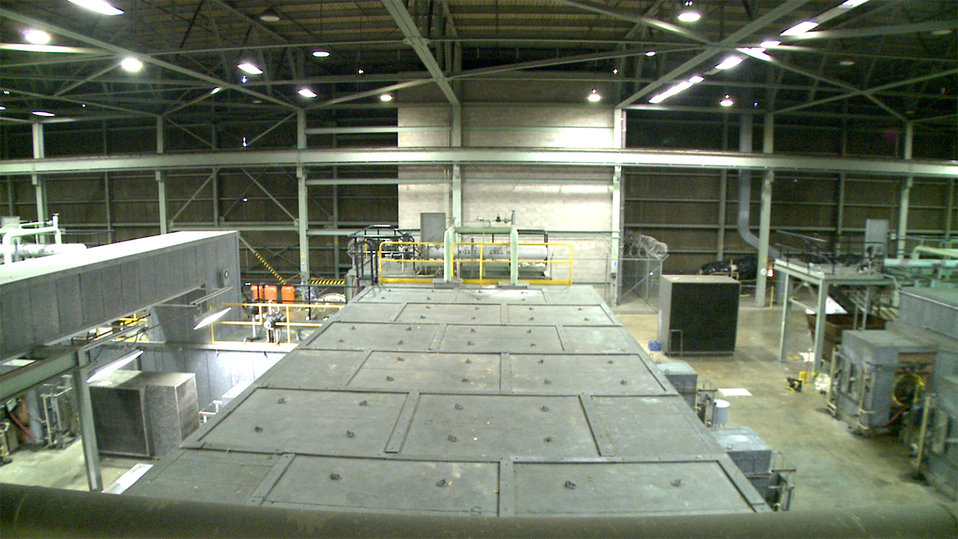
EM to Proceed with Demolition Following Completion of Cascade Cleanout Operations

The last equipment that had been operating in the uranium enrichment cascade at the Portsmouth site in Piketon was powered off May 30, 2012 after more than 57 years of operation. Pictured here is the facility where that equipment is located.